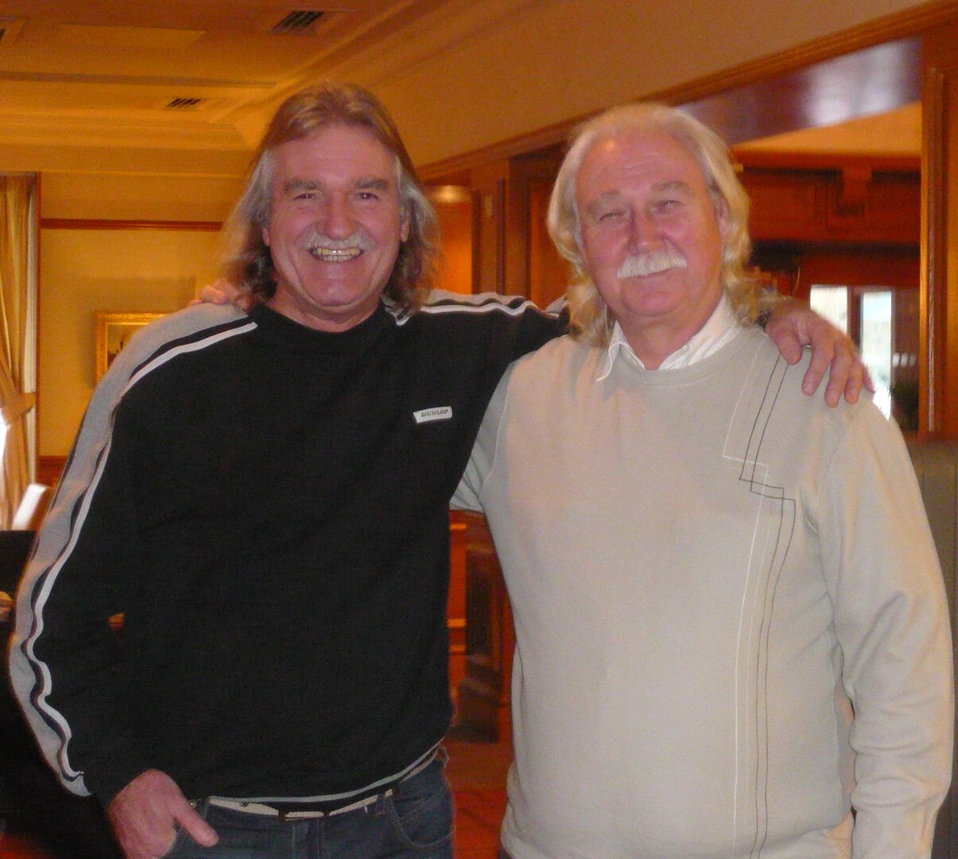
Keith Law and Frank Wilson. Reunion at the Holiday Inn, Maidstone.